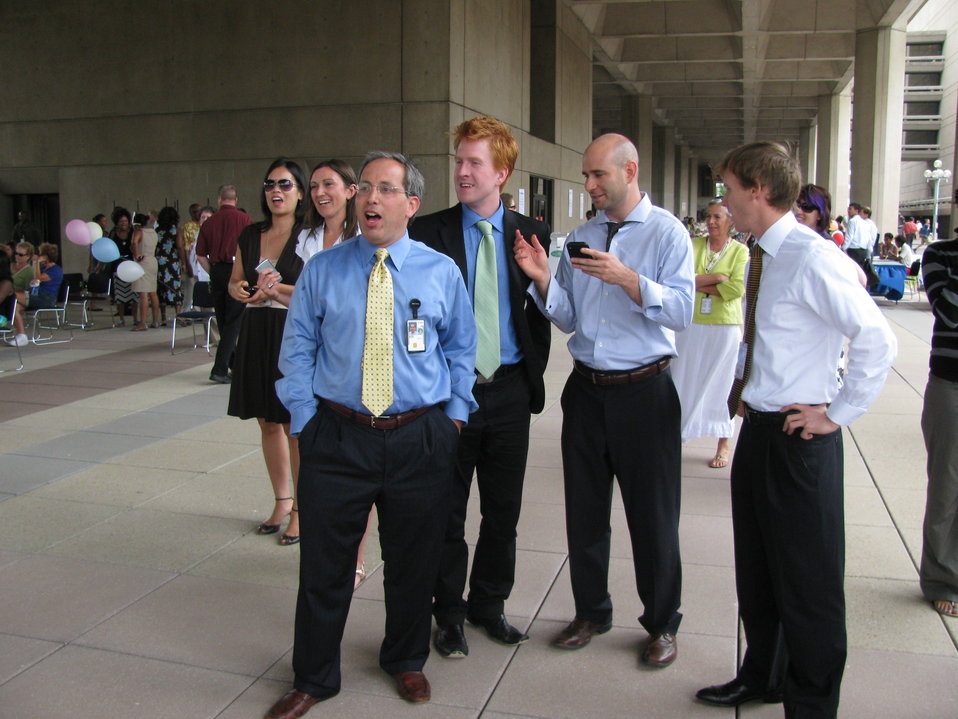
Clu lab pics 028